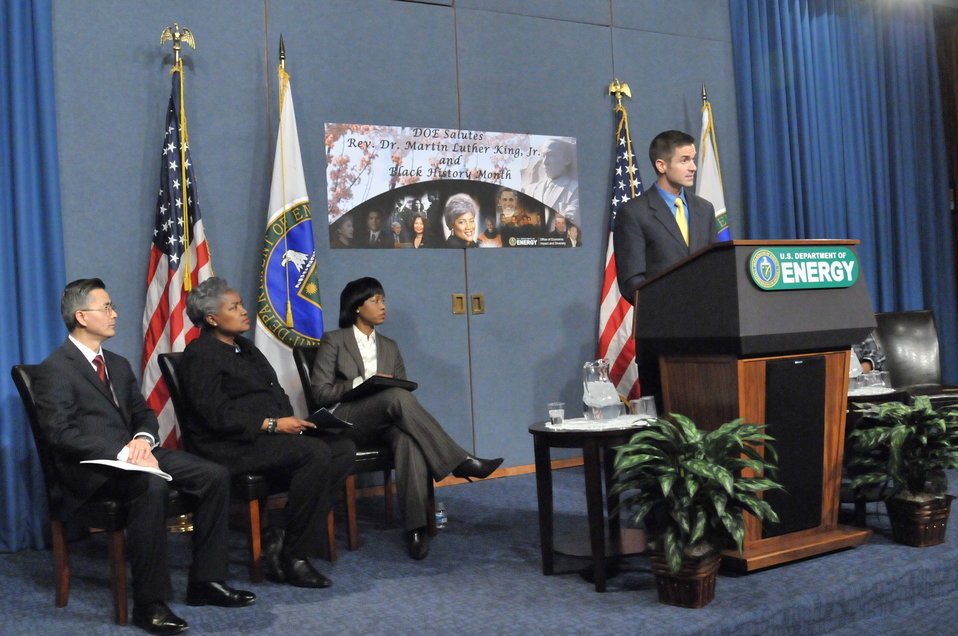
DEPARTMENT OF ENERGY -MARTIN LUTHER KING / BLACK HISTORY MONTH COMMEMORATIVE PROGRAM WITH DOE SECRETARY E. MONIZ IN ATTENDANCE